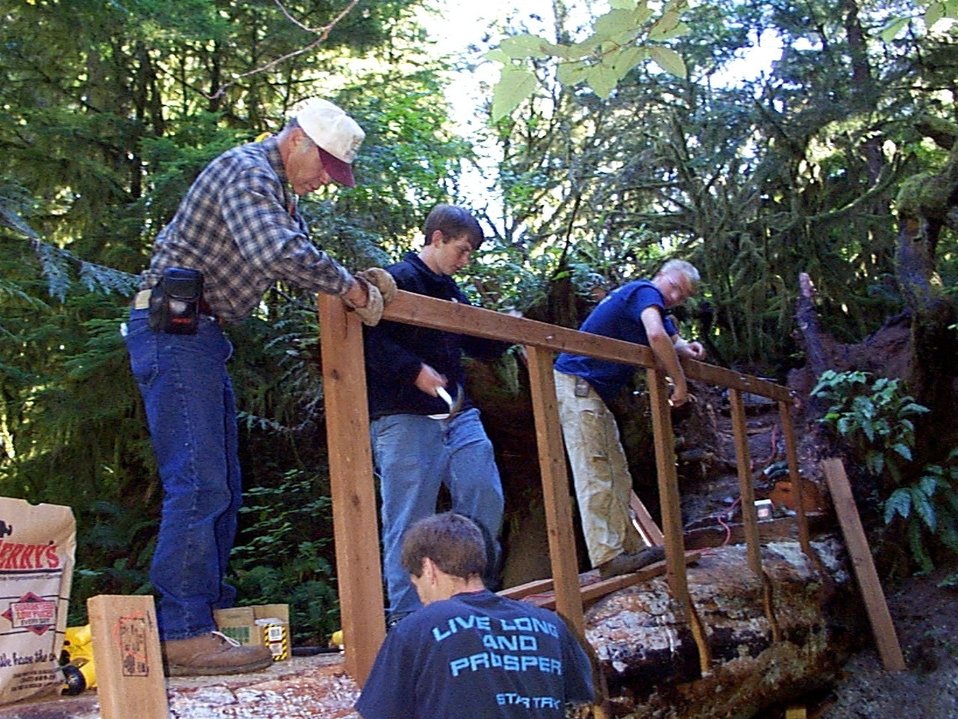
Boy Scouts install hand rail on the foot bridge at McGowen Creek.